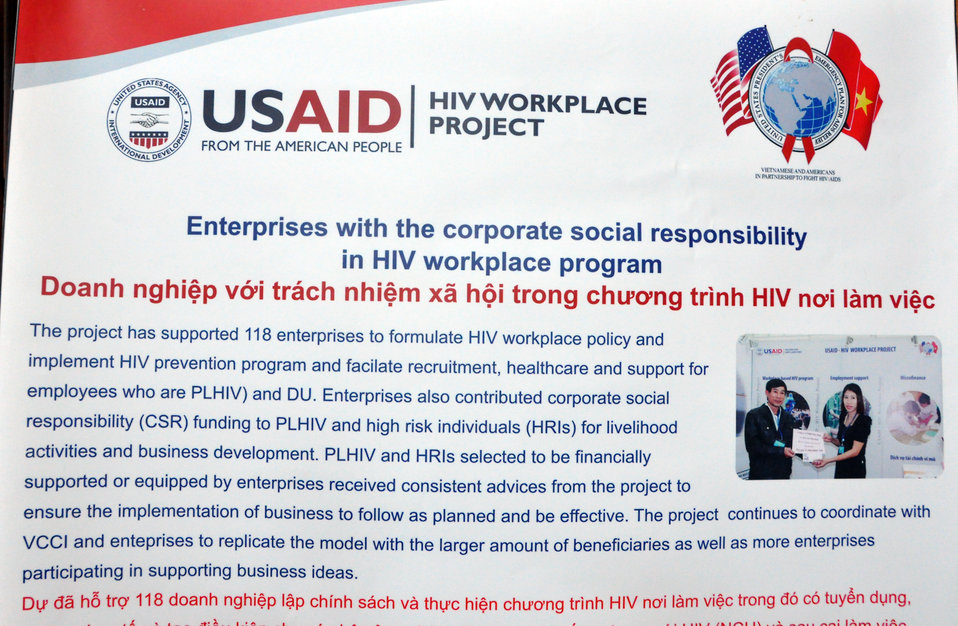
Microfinance Plan for People at Risk or Affected by HIV Found Sustainable

USAID supported a pilot model for microfinance, including credit, savings and insurance, for people living with or affected by HIV or those at high risk of becoming infected. After one year, the model has been found to be successful, replicable, and sustainable.